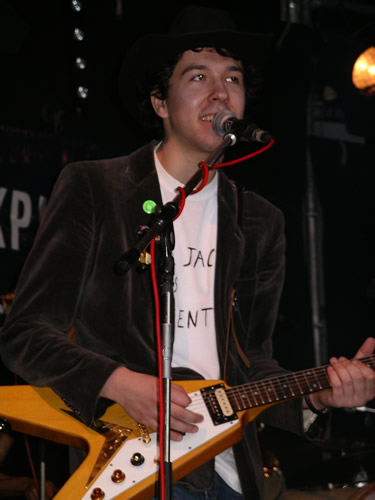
Dallas Explosion is a music group from Waals-Brabant, Belgium